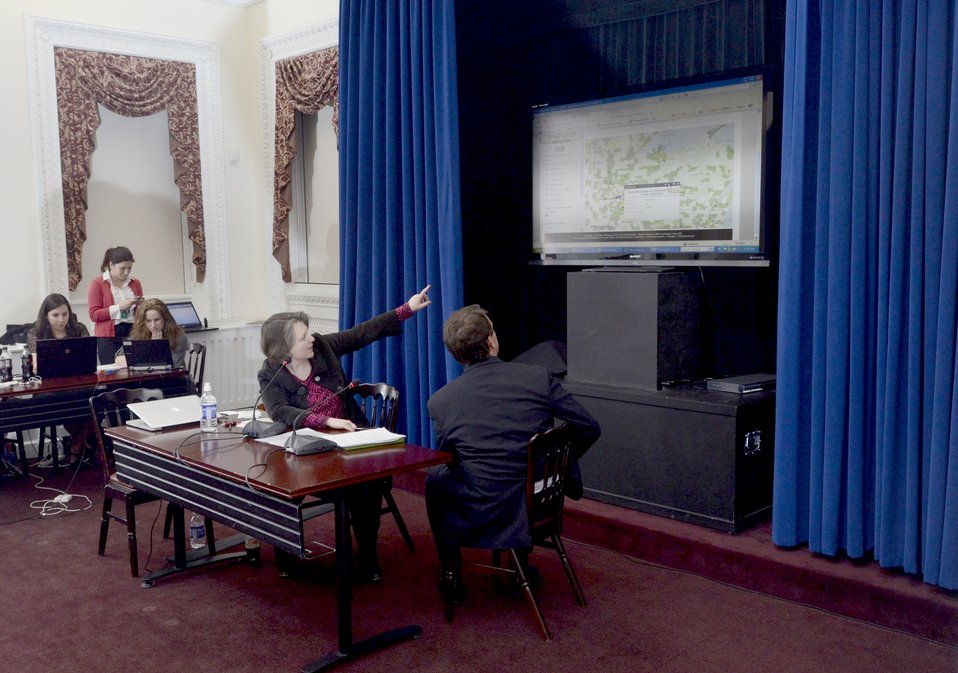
Agriculture Deputy Secretary Kathleen Merrigan and Director, White House Office of Public Engagement Jon Carson, during a Know Your Farmer Compass event that used twitter social media to continue the National Conversation on Local and Regional Food projects and how they offer economic opportunities to local farmers, ranchers and food entrepreneurs. The virtual conversation took place from the White House, in Washington, D.C., on Monday, March 5, 2012.